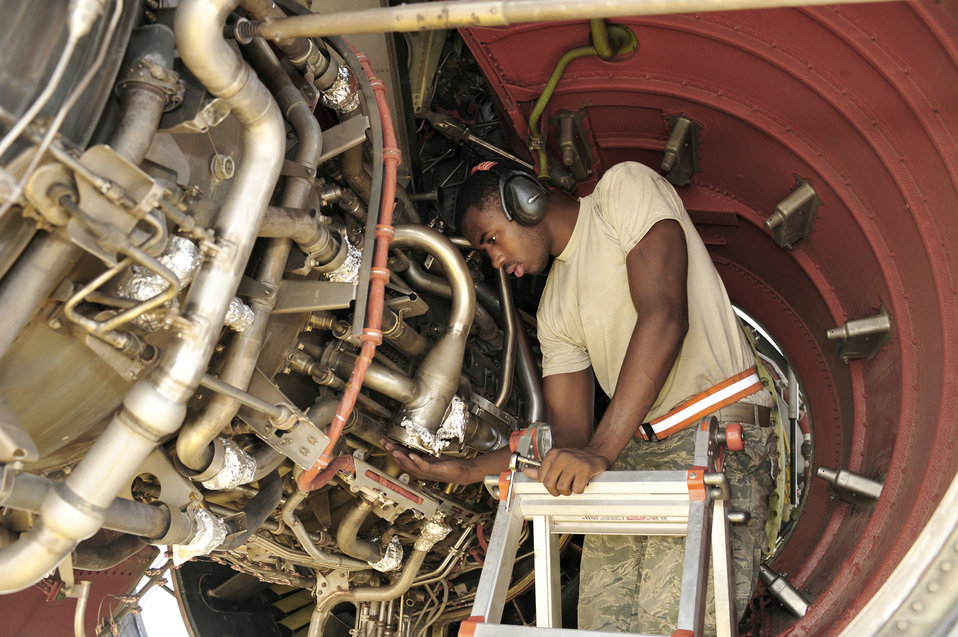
Inspecting each part

Airman 1st Class Mareguis Killebrew checks for leaks on a KC-10 Extender engine Aug. 29, 2009, at an air base in Southwest Asia. Airman Killebrew is assigned to the 380th Expeditionary Maintenance Squadron, and is deployed from Travis Air Force Base, Calif.